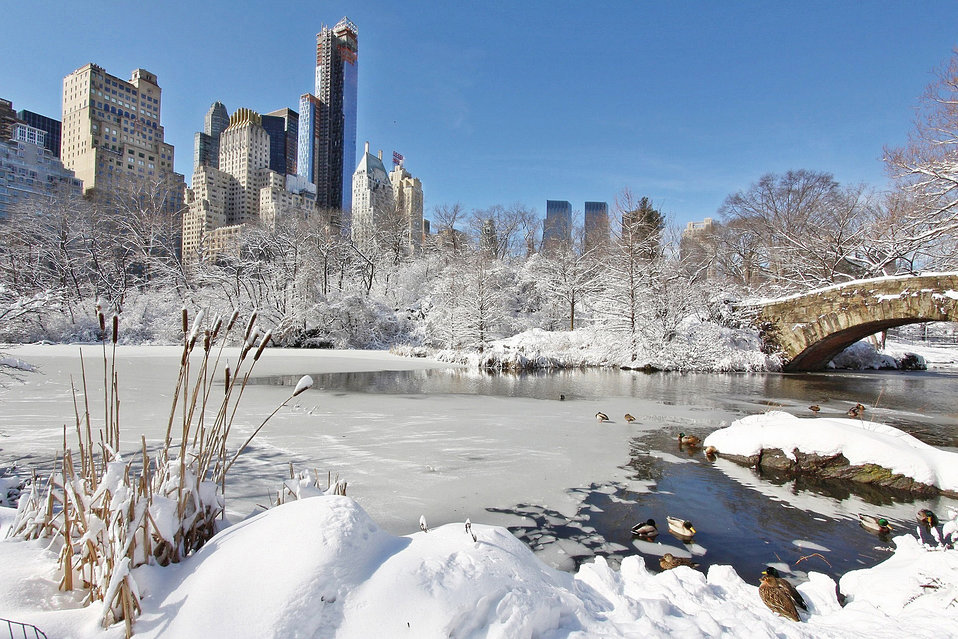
After snow storm

City under white blanket.